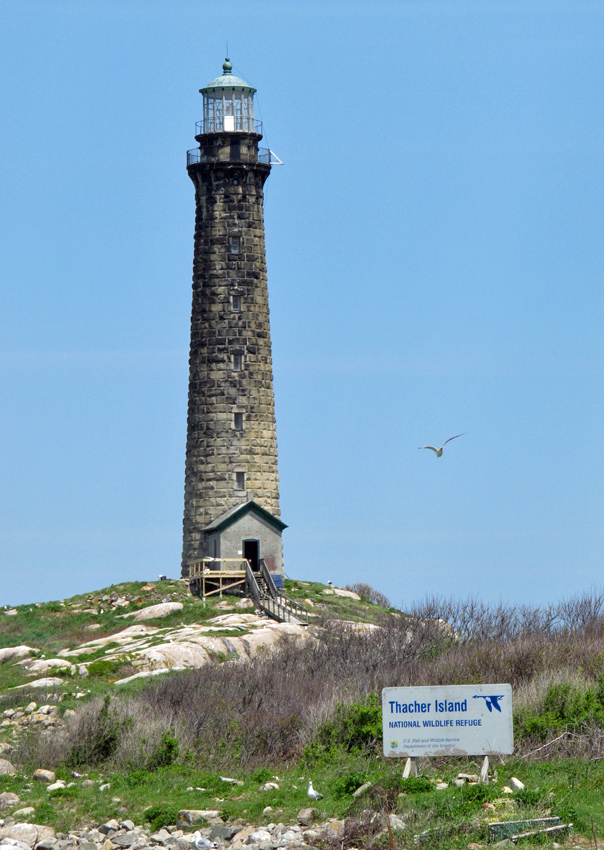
North tower

Thacher Island National Wildlife Refuge, MA.